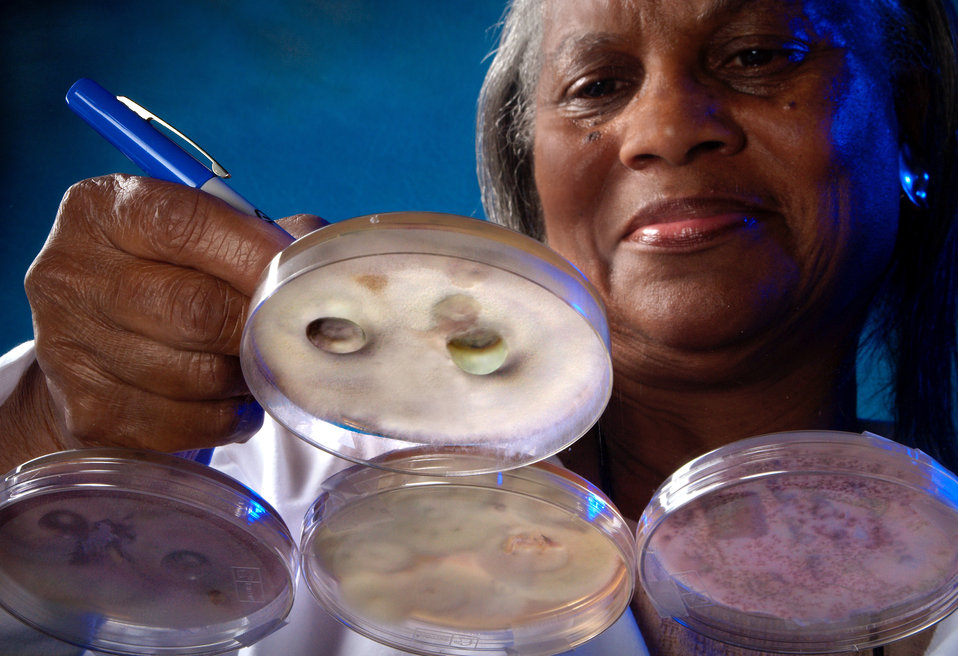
This photograph depicted Center of Disease Control's laboratory technician, Shirley McClinton as she was making notations on a Petri plate from a group of culture plates, which had grown Fusarium fungal colonies. These organisms had been received from an outbreak in patients with ocular keratitis. The mould was isolated using Potato Dextrose Agar, which had been incubated at 26�C for 5 - 7 days. This isolate was identified as a mould from the Fusarium oxysporum species complex.Keratitis is an inflammation of the cornea, the front part of the eye, and has many causes including bacteria, viruses and fungi. Note the two contact lenses on the surface of the agar medium.While Fusarium keratitis can be a serious infection, it is a rare disease. This infection cannot be transmitted from person to person. People who have trauma to the eye, certain eye diseases and problems with their immune system may be at increased risk for these types of infection.